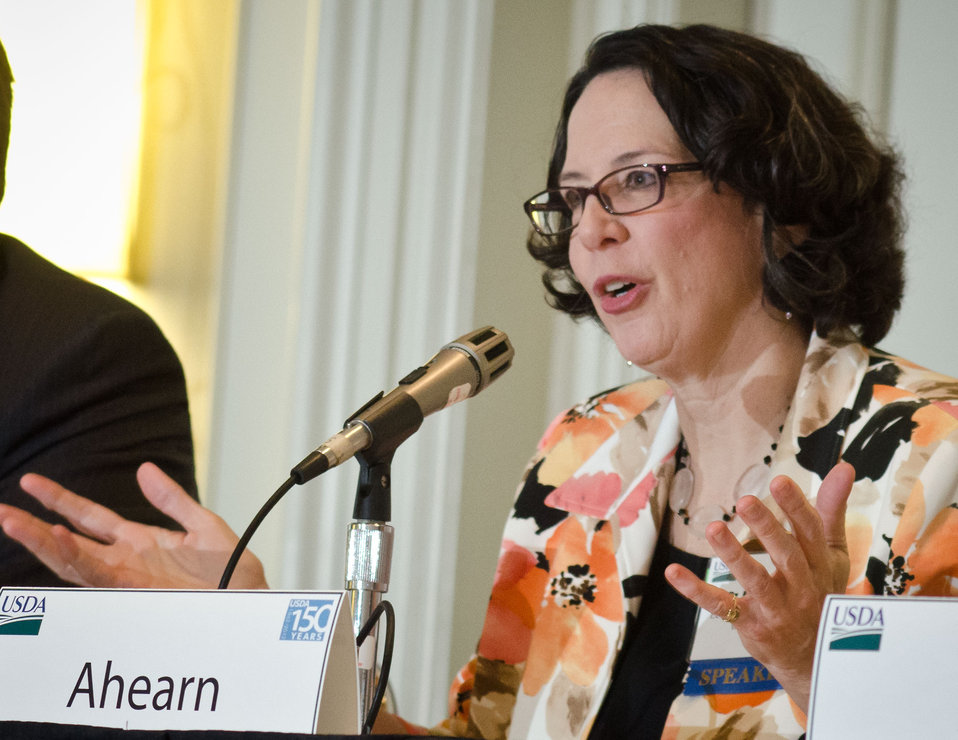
griculture Economic Research Service Economist Dr. Mary Ahearn responded to questions, during “The Farm Income Outlook for 2012” session of the Food Prices & Farm Income Track, at the 2012 Agricultural Outlook Forum, “Moving Agriculture Forward, Growing, Innovating and Celebrating 150 Years.” held at the Crystal Gateway Marriott Hotel, Arlington, Virginia, on Friday, February 24, 2012. The session focused on general measures of the financial well being of the farm economy, including USDA’s official outlook for farm income, the distribution of income across farm households, and the competitiveness of the rural economy.